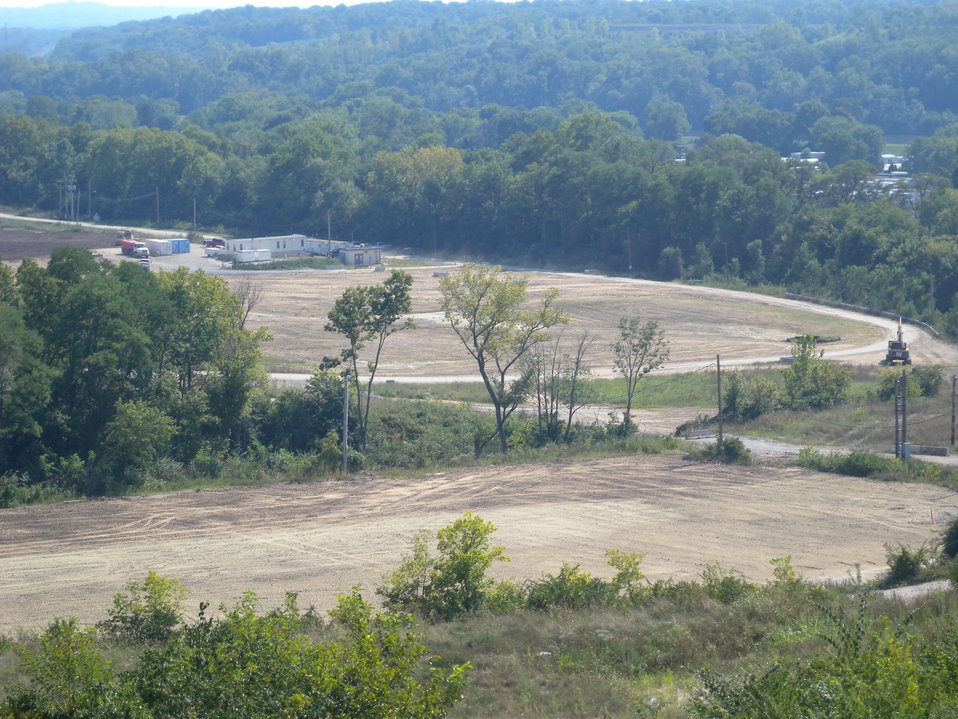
Operable Unit-1 (after)

The Mound Site’s Operable Unit-1, a former mixed-waste landfill, is shown before and after Recovery Act cleanup.